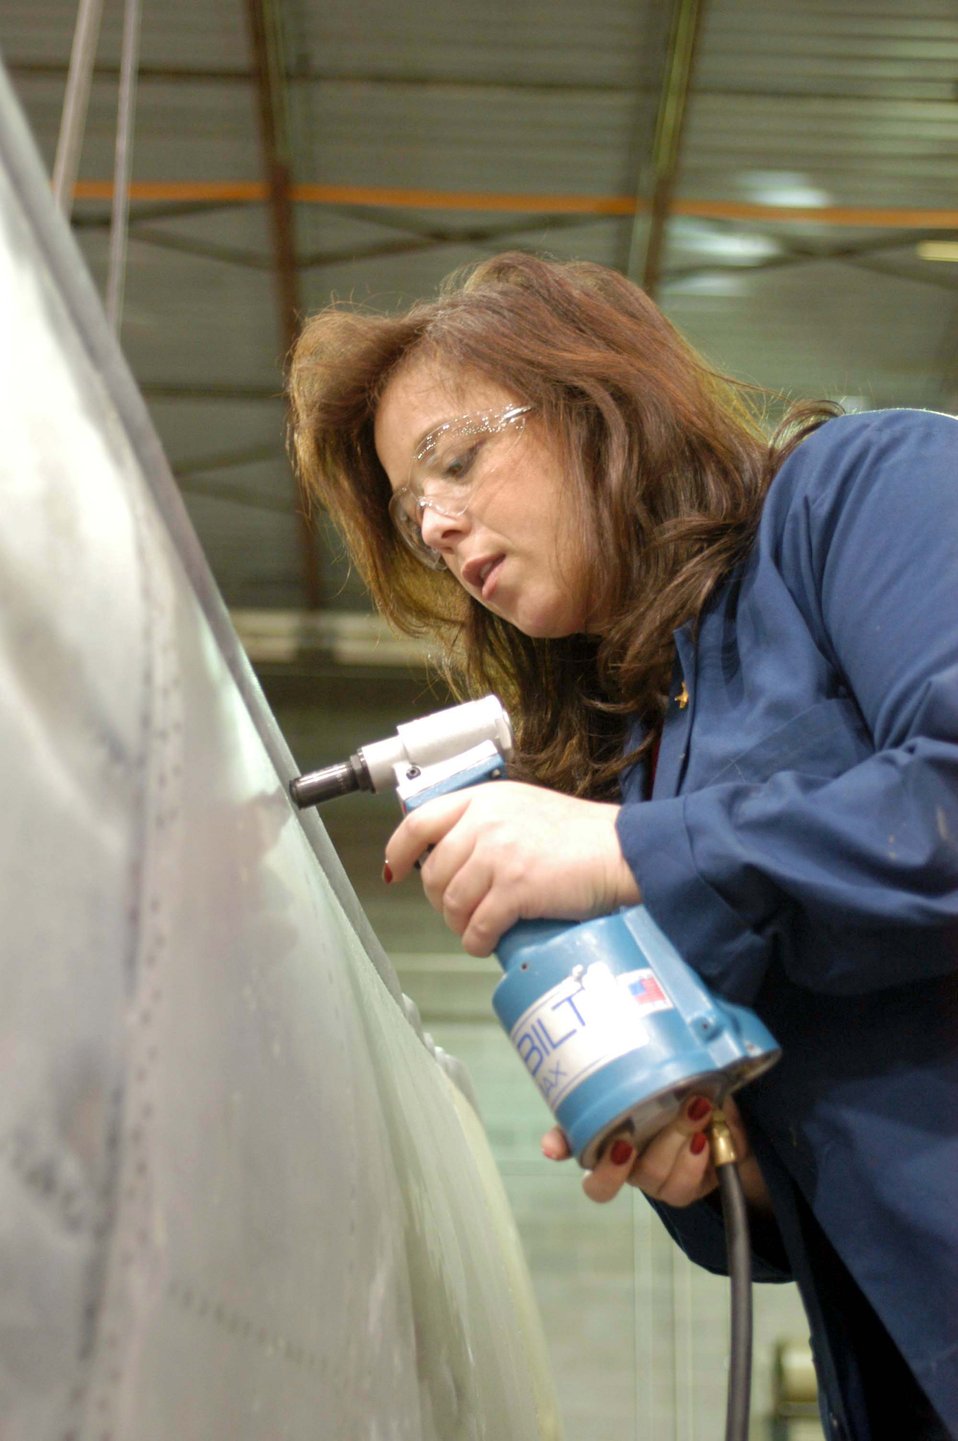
From sheet metal to aircraft

ROBINS AIR FORCE BASE, Ga. -- Patricia Pickett rivets exterior peripheral seals around an F-15 Eagle fuel tank. She is one of 53 who works in the maintenance directorate's sheet metal shop here.